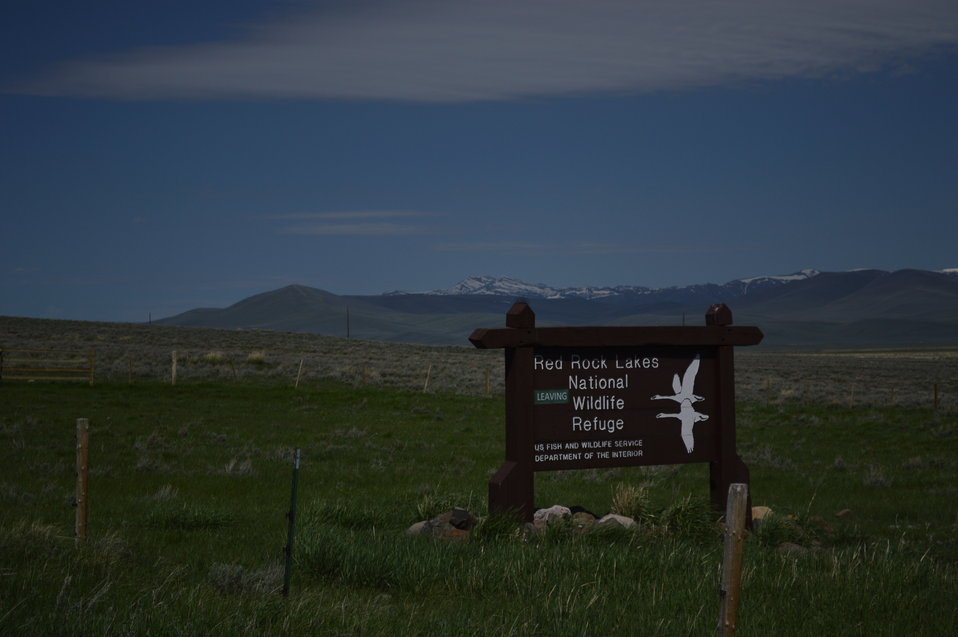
Regional Leadership Visit to Montana 2014